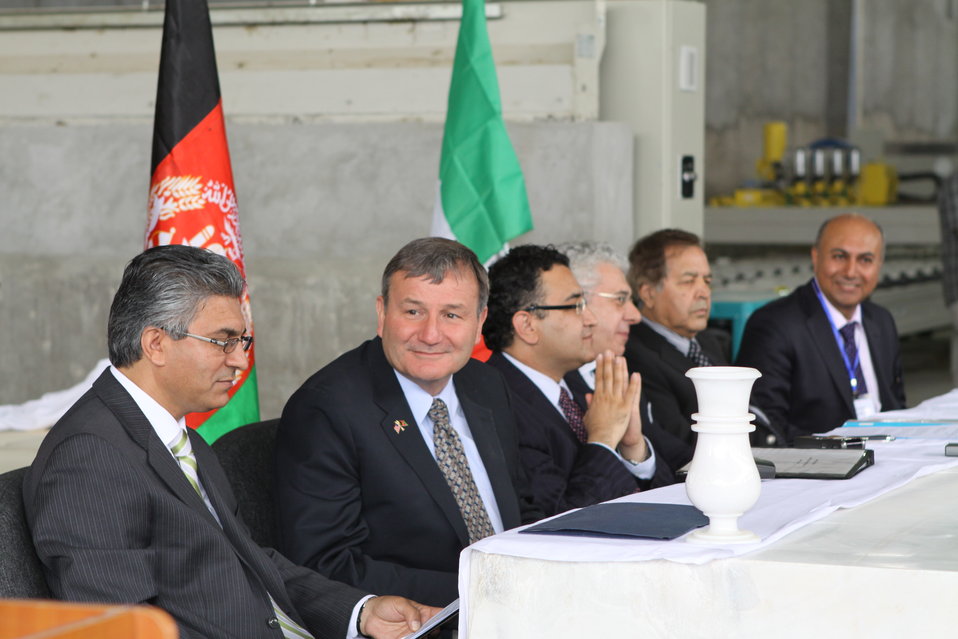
100525 Hirat Marble Conference 135